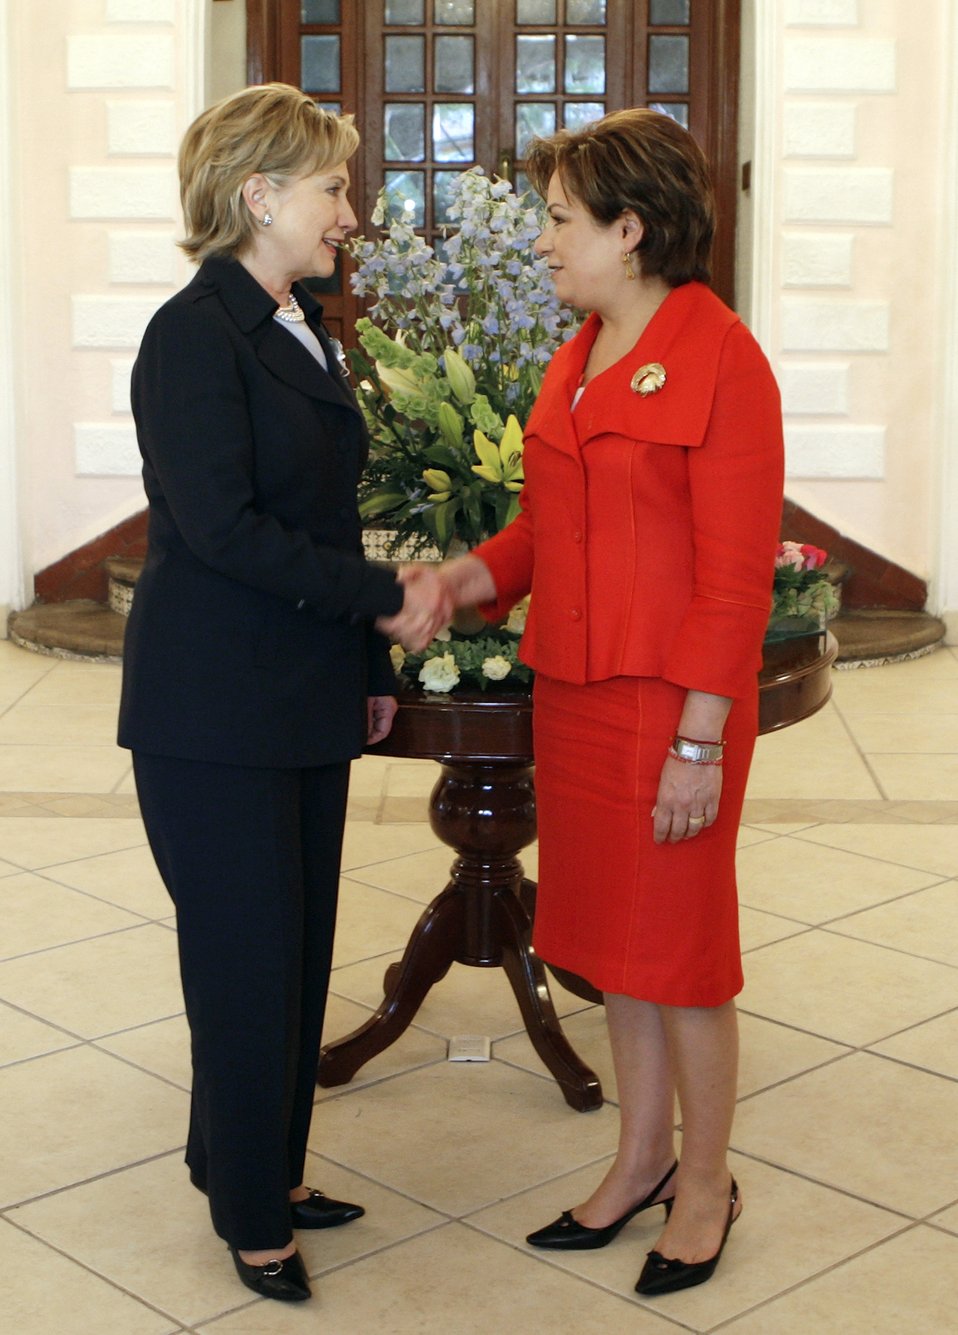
Secretary Clinton Meets Mexican Foreign Minister

U.S. Secretary of State Hillary Clinton is greeted by Mexican Foreign Minister Patricia Espinosa as she arrives at Los Pinos presidential residence in Mexico City, March 25, 2009. Clinton is in Mexico for a two-day visit.